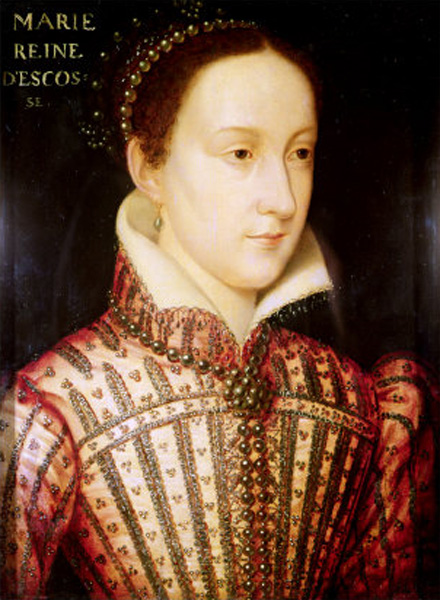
Mary Stuart Queen